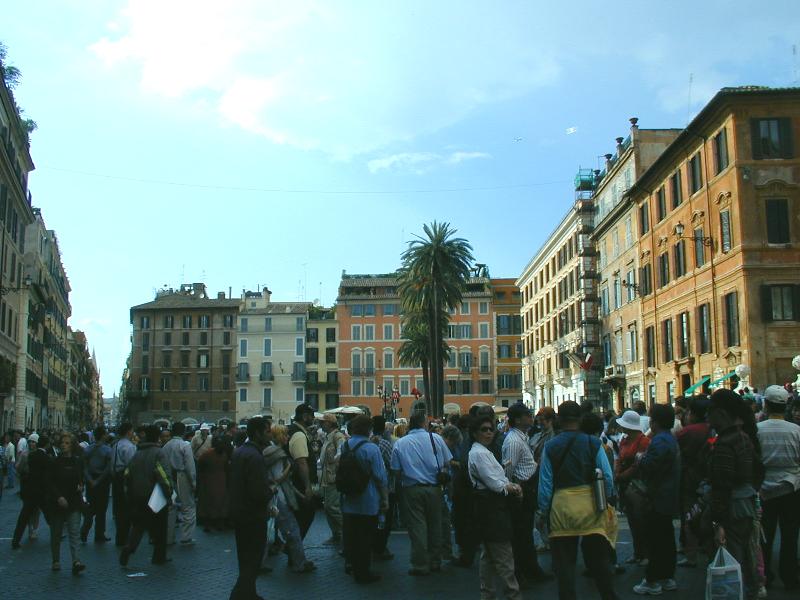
010511 02 piazzadispagna